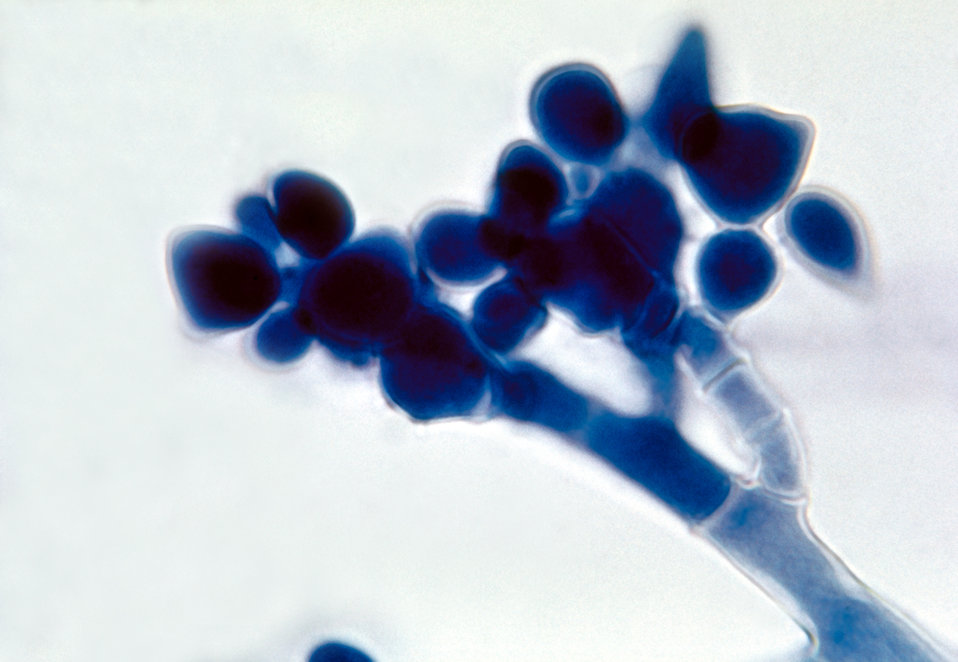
This photomicrograph shows a clusters of asexual spore-containing conidia of a Botrytis sp. fungus.